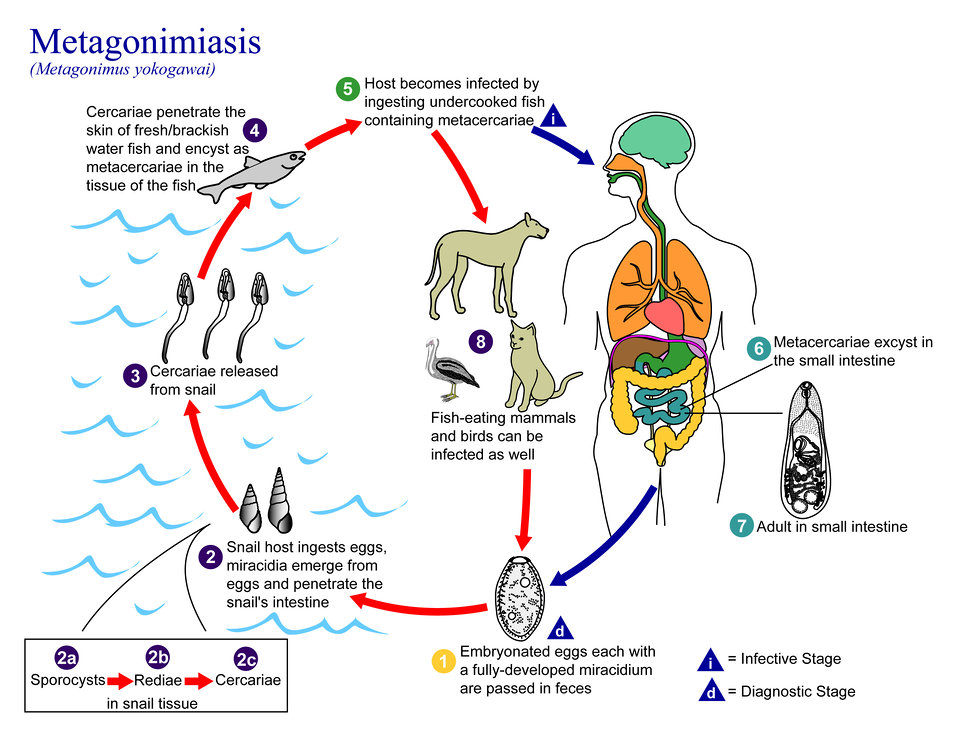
This is an illustration of the life cycle of Metagonimus yokogawai, the causal agent of Metagonimiasis.